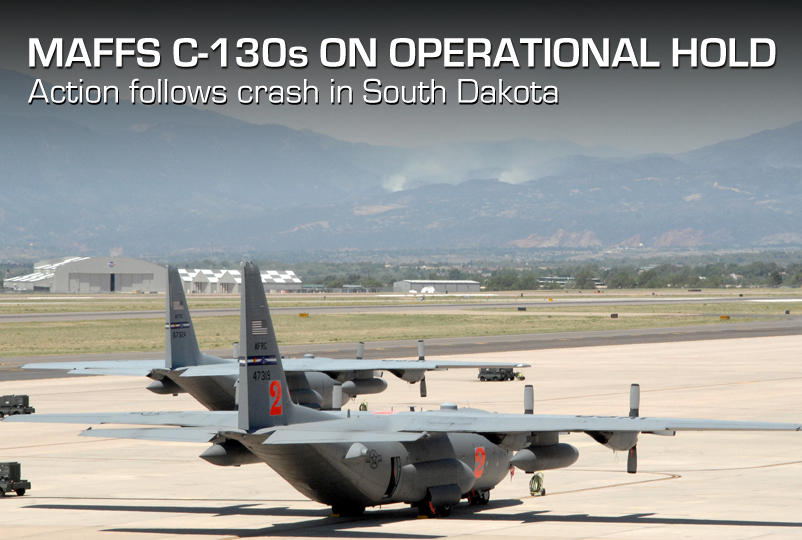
MASSF C-130s ON OPERATIONAL HOLD